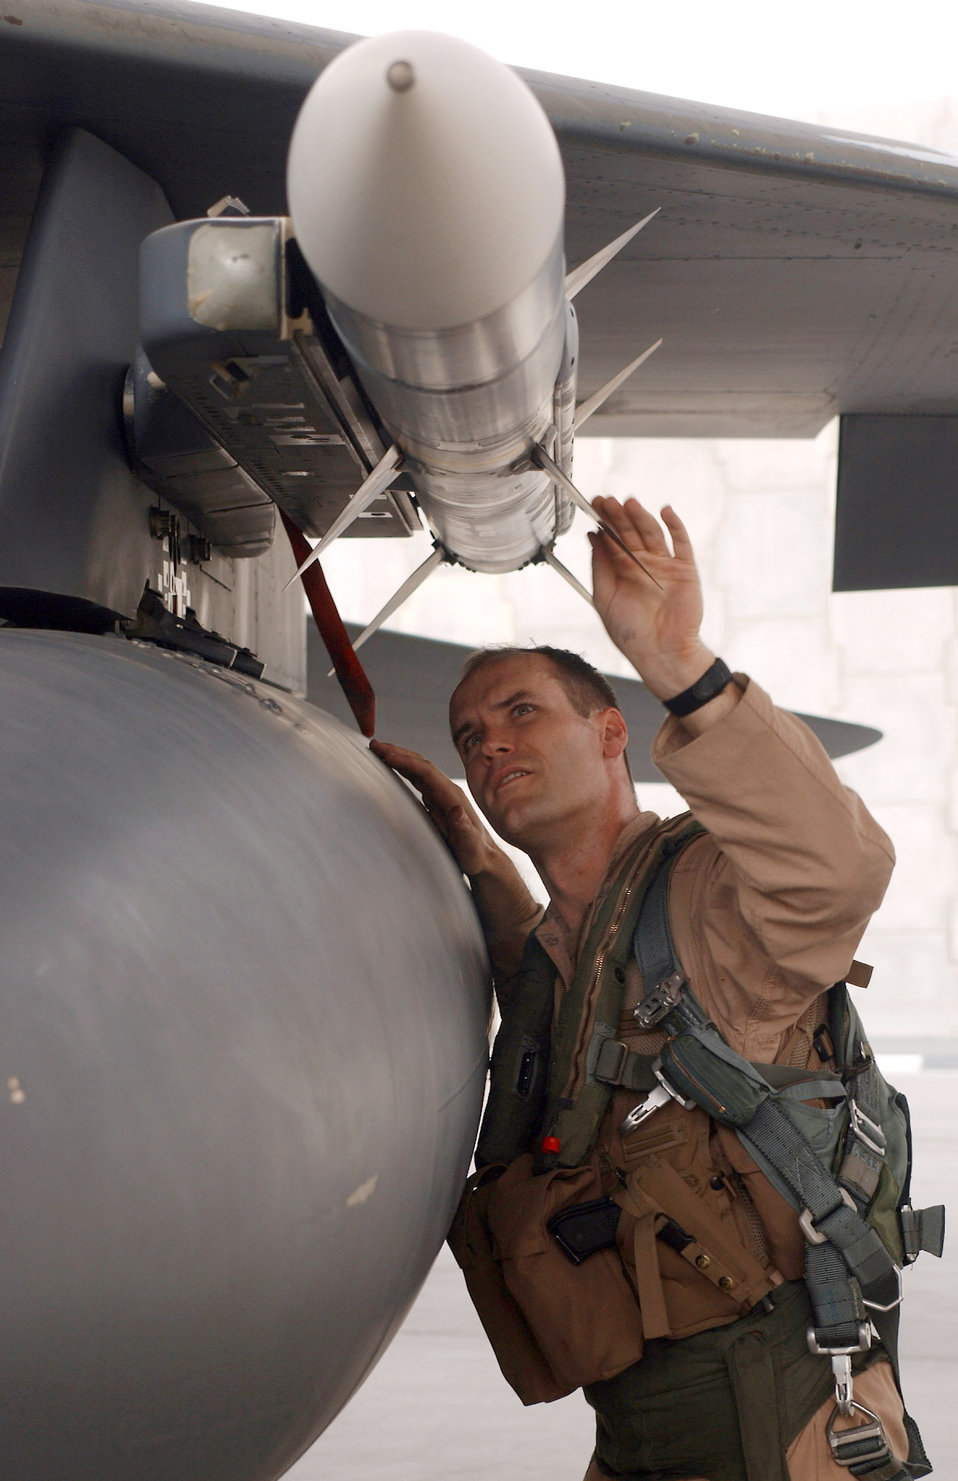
Combat mission

Maj. Jeff O'Donnell checks an AIM-120 air-to-air missile during the pre-flight inspection of his F-15E Strike Eagle before a combat mission from a forward operating base in Southwest Asia Aug. 18. Major O'Donnell is a pilot deployed to the 335th Expeditionary Fighter Squadron from Seymour Johnson Air Force Base, N.C.